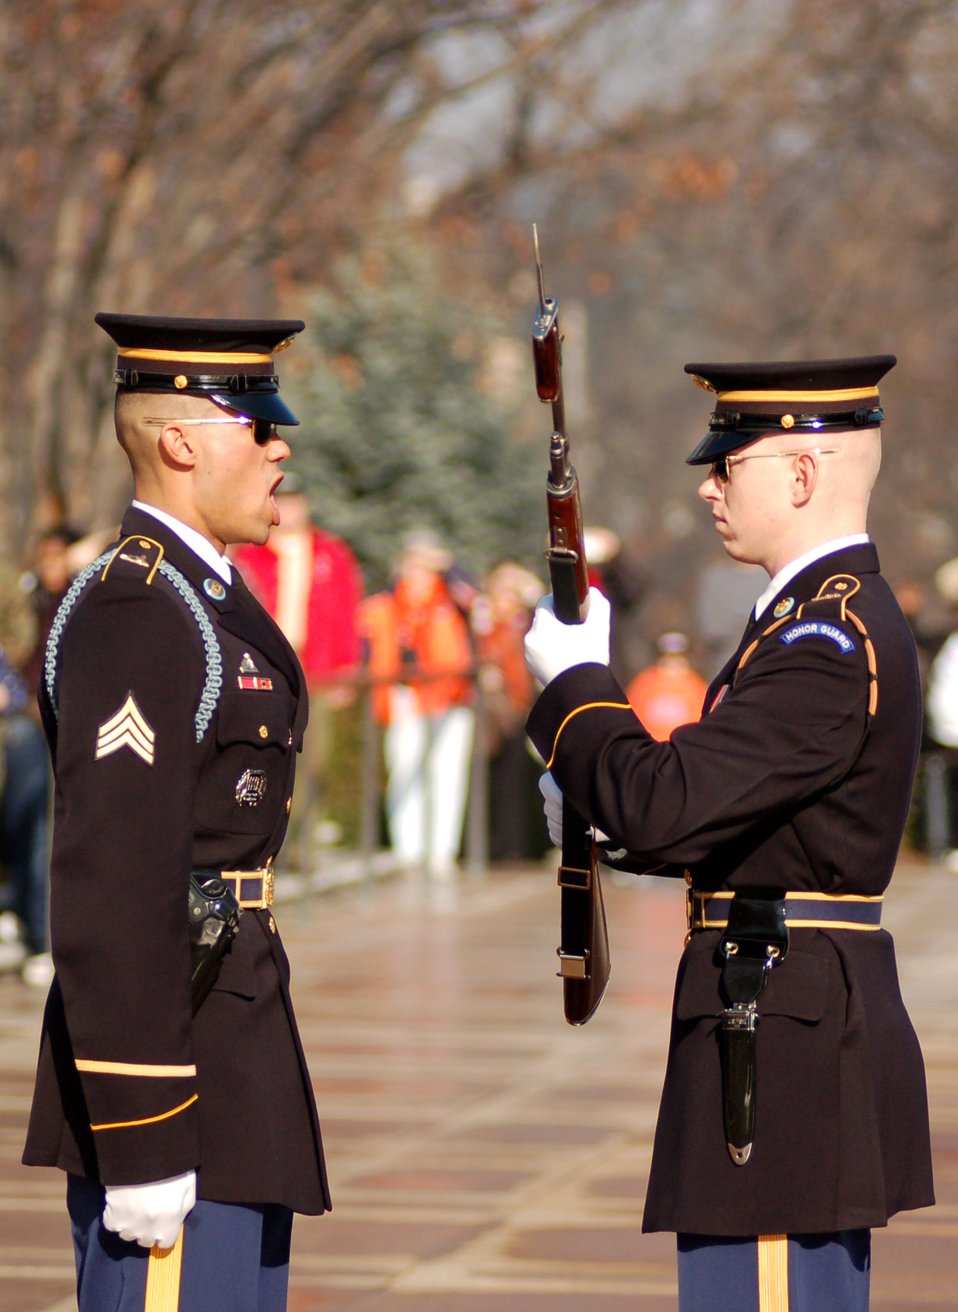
Pentagon Channel documentary focuses on Old Guard

An Army Old Guard sergeant barks a command during the changing of the guard Dec. 14 at the Tomb of the Unkowns at Arlington National Cemetery in Virginia. The Pentagon Channel will be featuring the Old Guard throughout the month of January.